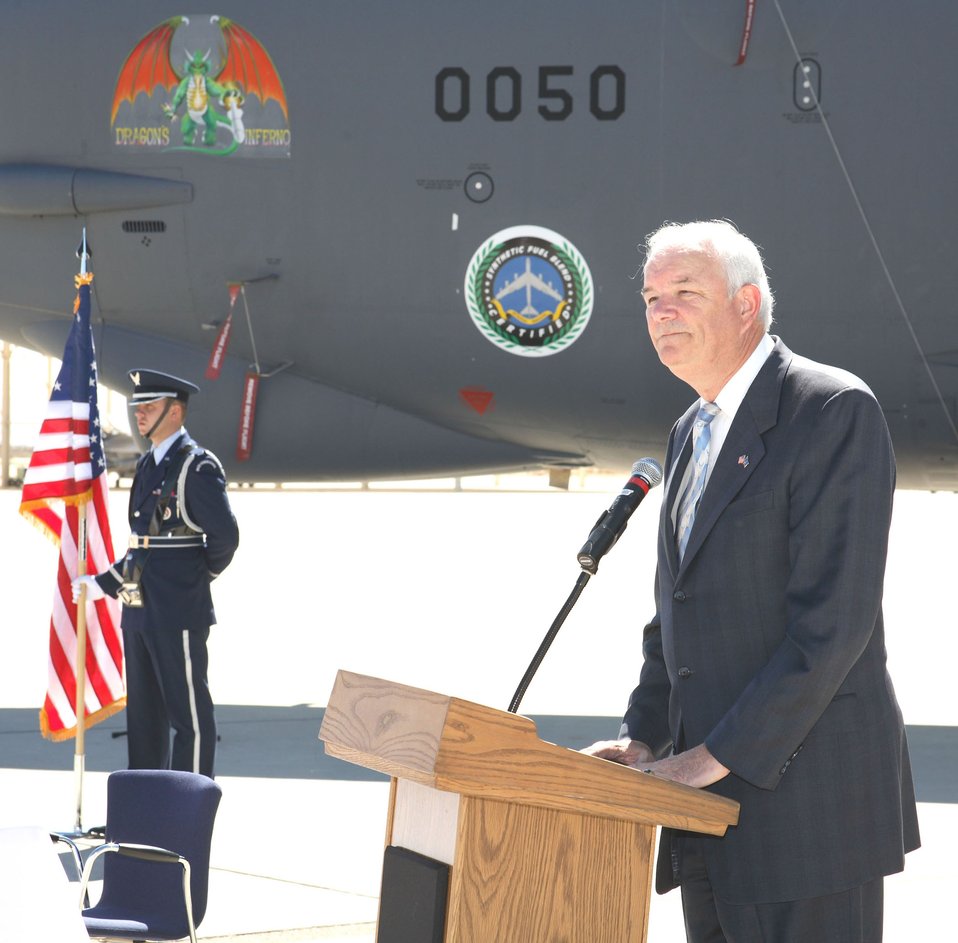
SECAF certifies Fischer-Tropsch synthetic fuel blends for B-52H

Secretary of the Air Force Michael W. Wynne fields questions from the media during a ceremony at Edwards Air Force Base, Calif., Aug. 8, certifying Fischer-Tropsch synthetic fuel blends for use in the B-52H Stratofortress.